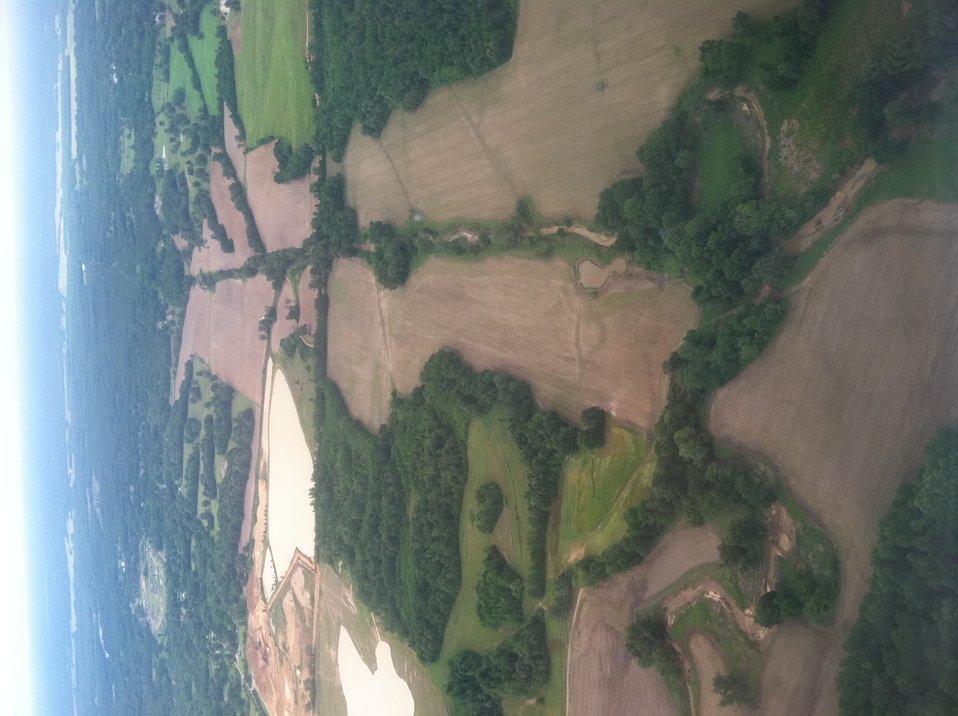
Farm land approximately 40 miles east of Memphis,TN, shows no signs of flooding on Saturday, May 14, 2011.